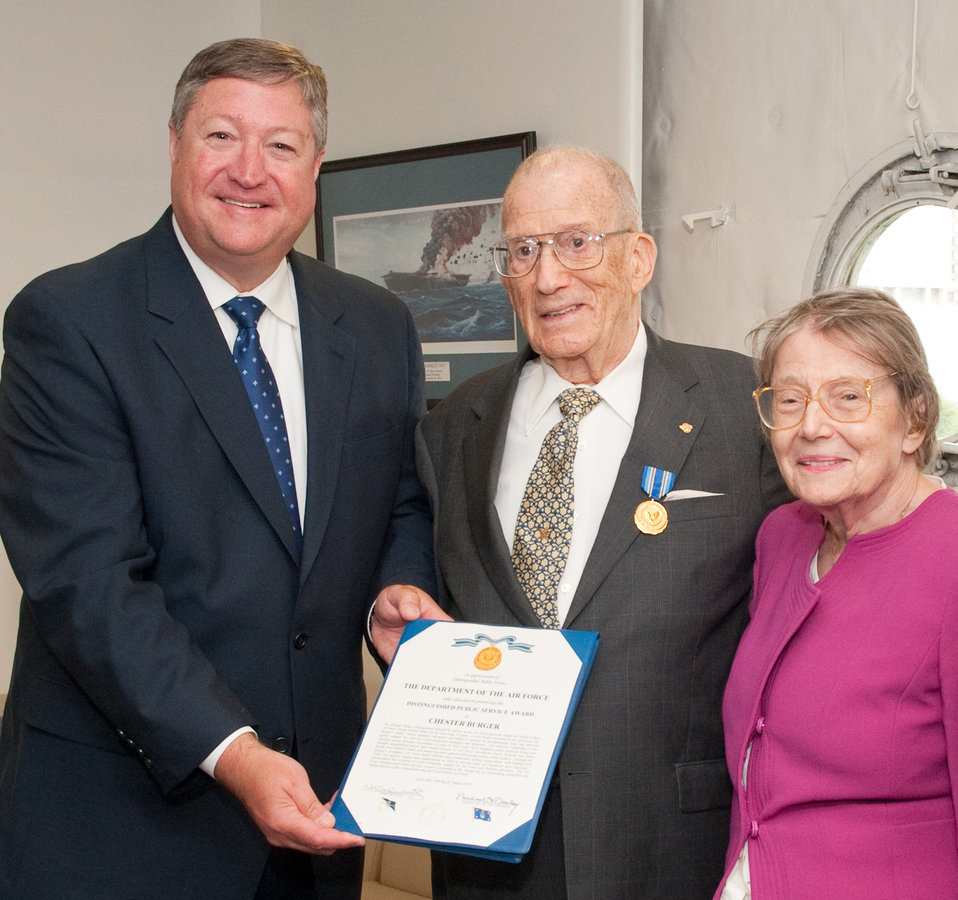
Air Force Week New York City Public Service Award

The Honorable Michael Donley (left), Secretary of the Air Force, presented Mr. Chester Burger (center), with his wife Elizabeth (right), the Air Force Distinguished Public Service Award to Mr. Chester Burger for service as an Air Force advocate under the Public Affairs Advisory Group in New York City for more than 15 years, on Aug. 24, 2010; after the Air Force Week New York City proclamation ceremony in the USS Intrepid.